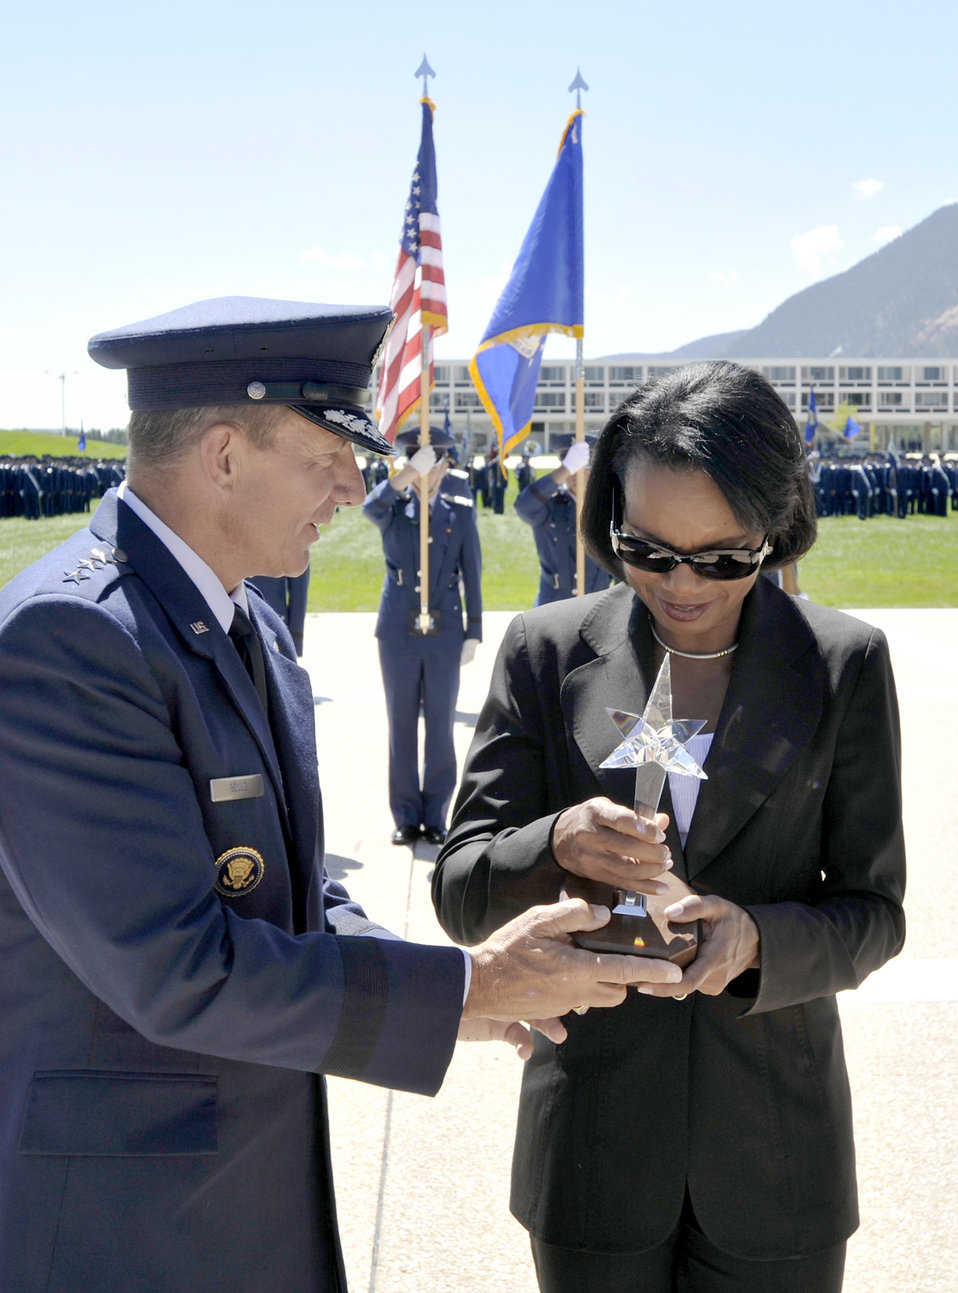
Condoleezza Rice receives '09 TD White Award

Air Force Academy Superintendent Lt. Gen. Michael C. Gould presents Dr. Condoleezza Rice with the 2009 Thomas D. White Award there Aug. 26, 2010, for her contributions to national security and defense during her career as a professor, presidential adviser, diplomat, author and national security expert.